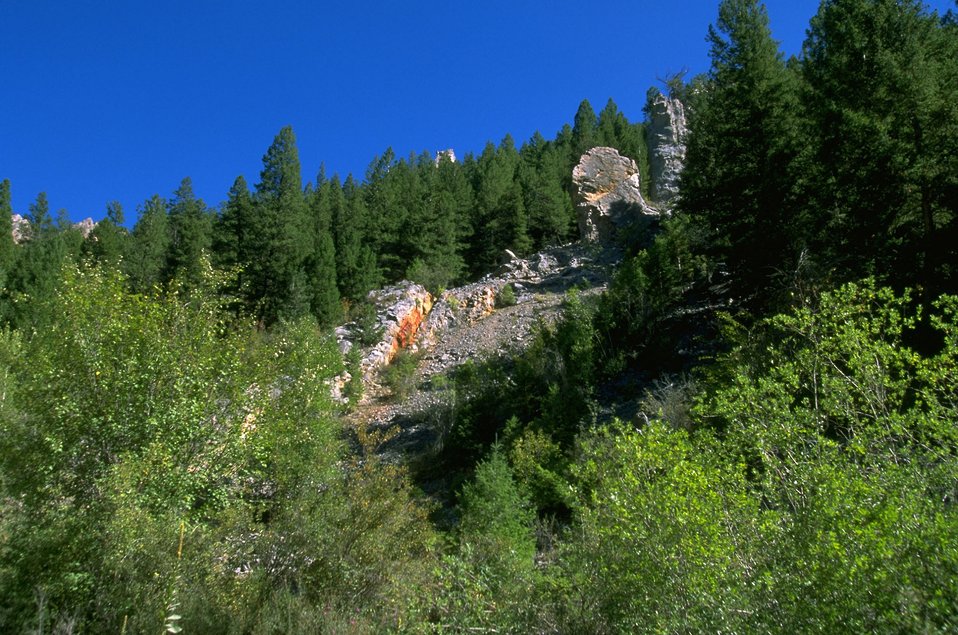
Rattler Gulch-Limestone Cliffs ACEC